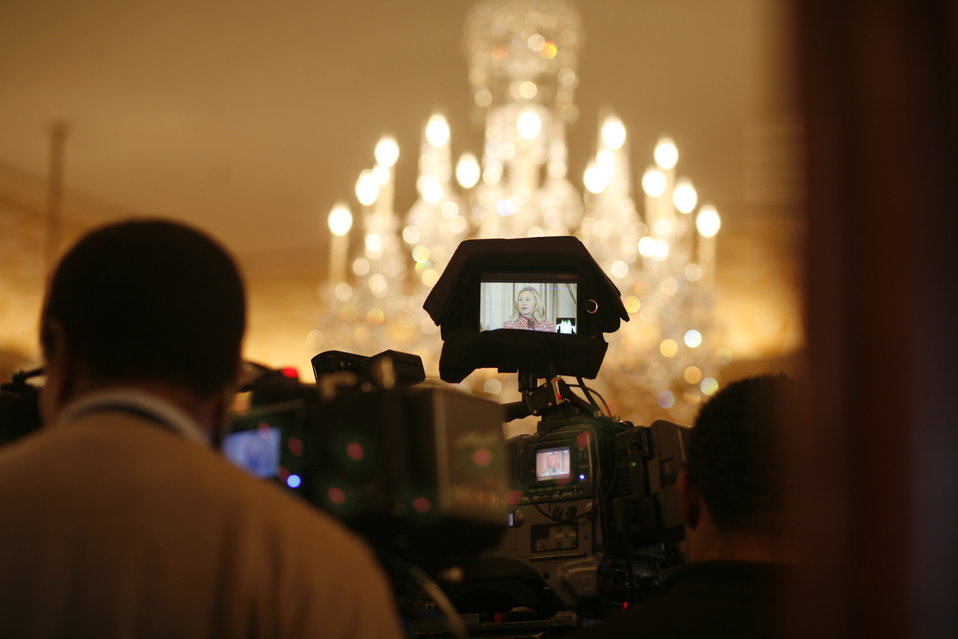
Secretary Clinton Delivers Remarks at the State Department Global Business Conference

Behind the scenes: U.S. Secretary of State Hillary Rodham Clinton delivers remarks at the first-ever State Department Global Business Conference at the U.S. Department of State in Washington, D.C., on February 21, 2012.